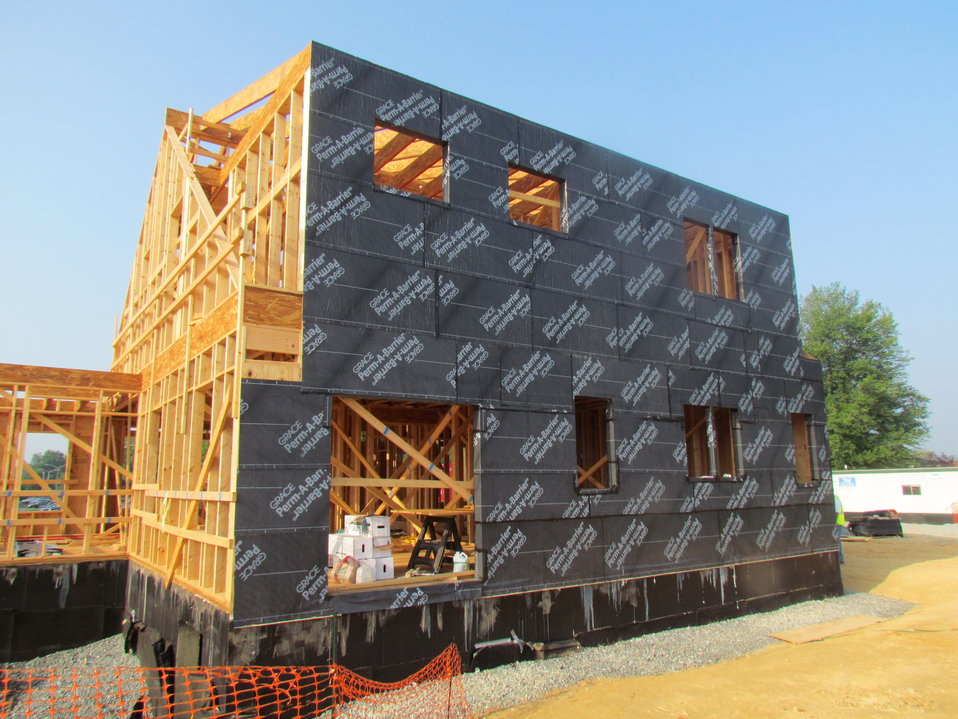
Net-Zero Energy Residential Test Facility - Sheathing and air/moisture barrier applied to north side of facility.